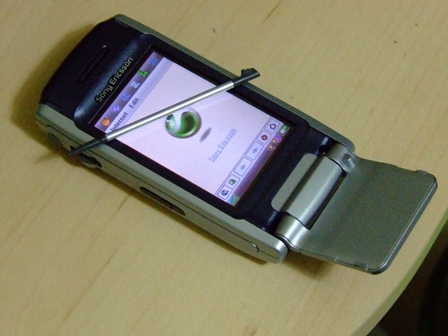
P900 with flip open, browser application started. Image taken with a 5.1 MP Fujifilm camera. Glidefan